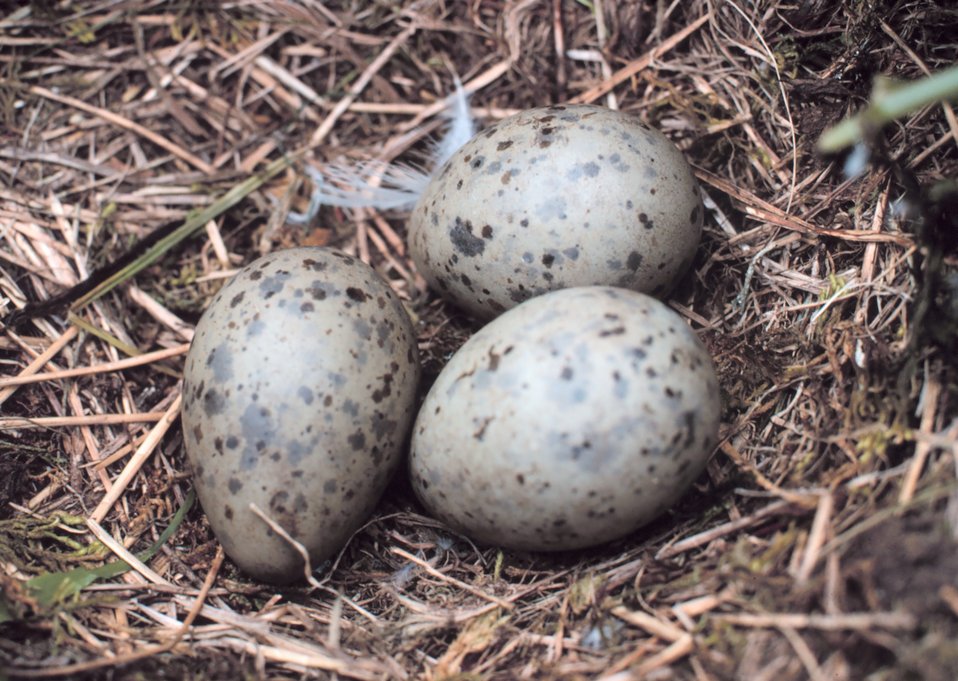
Closeup of spotted gull eggs.